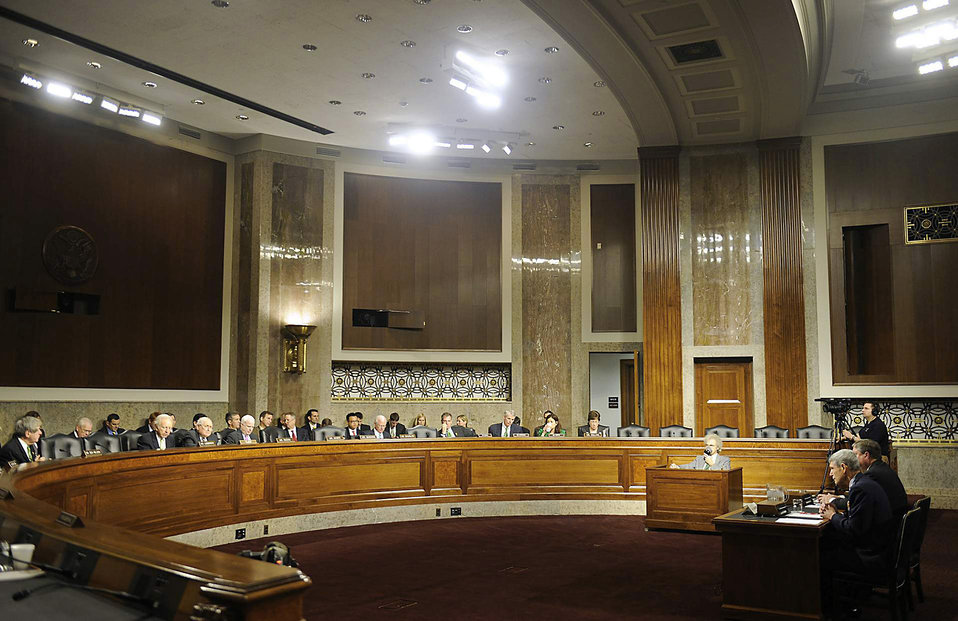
2012 Budget

The Senate Armed Services Committee hears testimony from Secretary of the Air Force Michael Donley and Air Force Chief of Staff Gen. Norton Schwartz on March 17, 2011, in Washington, D.C. The service leaders provided details on the Air Force's fiscal 2012 national defense authorization budget request.